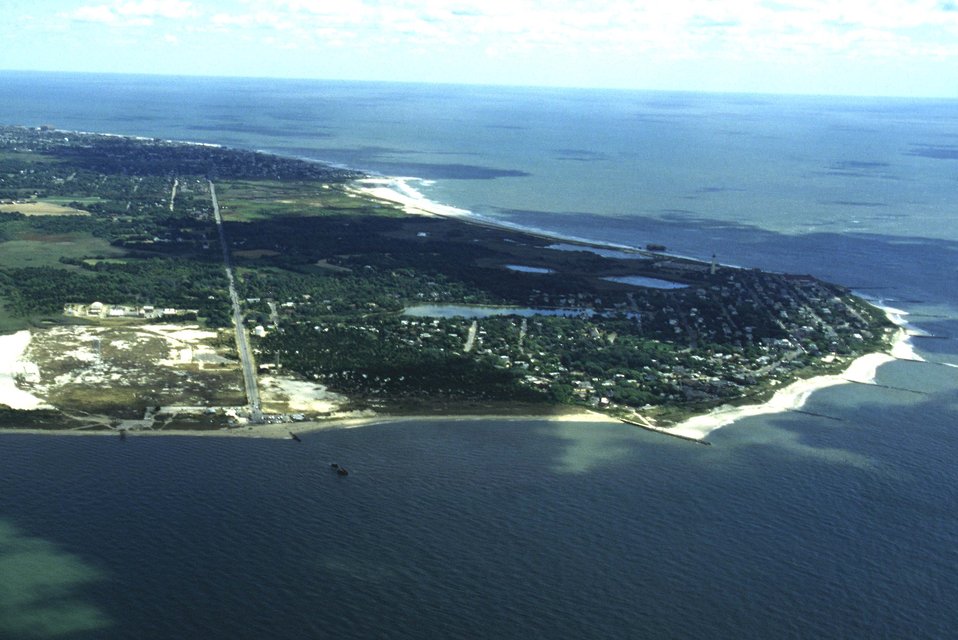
Cape May Point, NJ